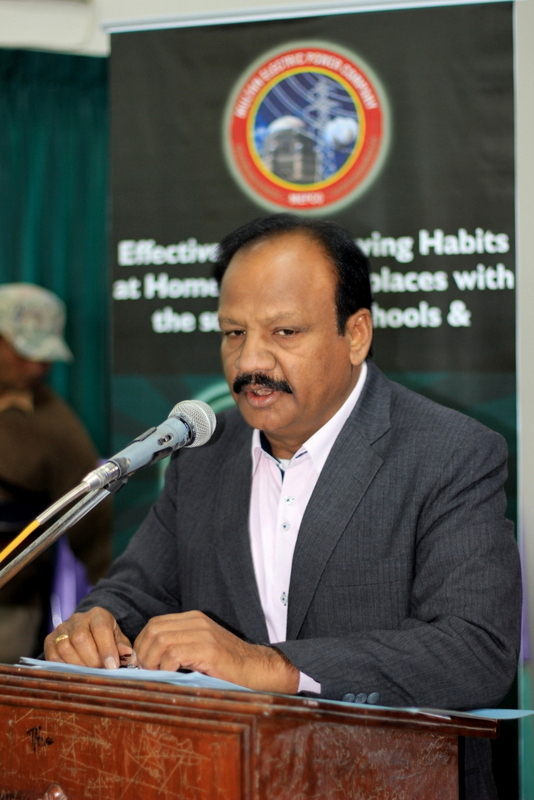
USAID Power Distribution Program-Energy Conservation Seminar at Multan Public School and Colleges for Girls, Multan.

Mr.Emanual Sardar(XEN,MEPCO), highlighting the role and functions of MEPCO as an electric distribution company, the importance of energy conservation and discussing measures that are being taken to resolve the prevailing electricity shortfall by saving electricity and preventing losses.